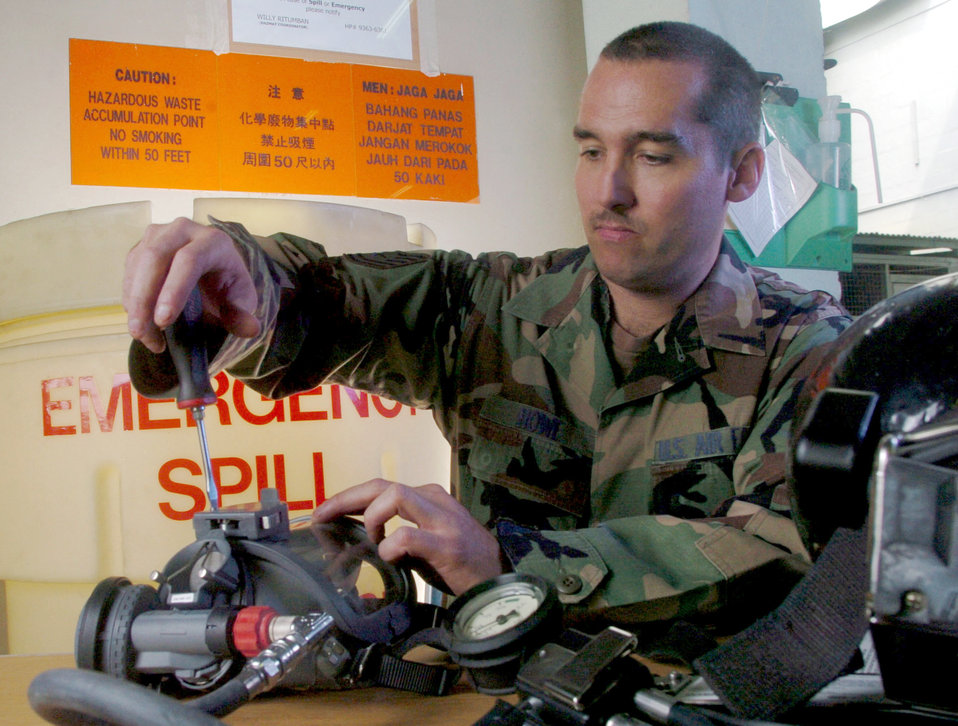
Succeeding in Singapore

PAYA LEBAR AIR BASE, Singapore -- Tech. Sgt. Randy Howe uses a screwdriver to inspect a self-contained breathing apparatus during routine maintenance here. Sergeant Howe is a fuels specialist from the 497th Combat Training Squadron. The squadron supports regular temporary-duty rotations of U.S. fighter aircraft.